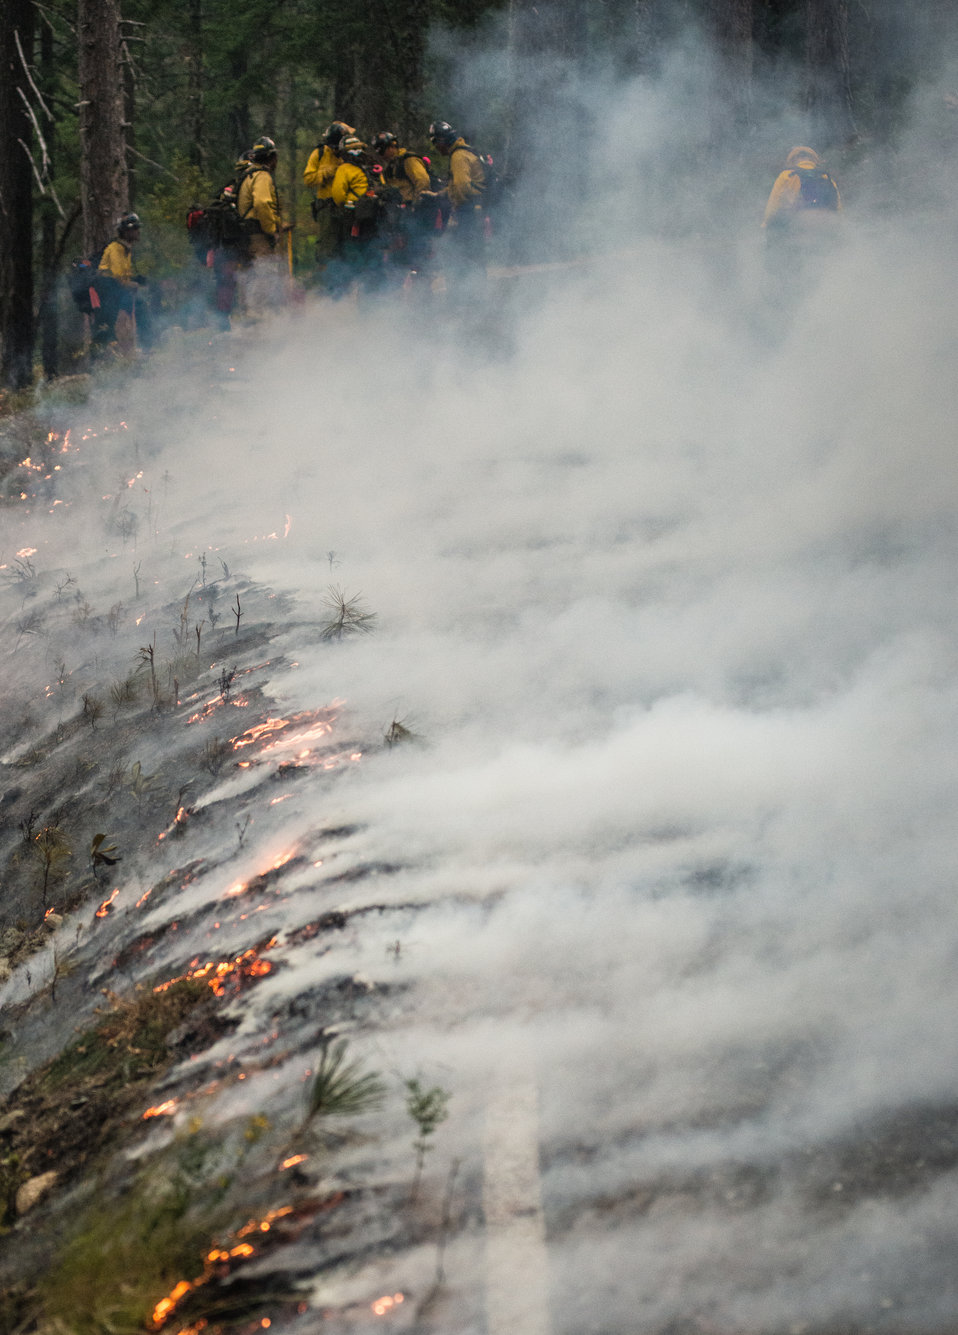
Geronimo Interagency Hotshot Crew, Department of the Interior (DOI) Indian Affairs (IA) Bureau of Indian Affairs (BIA) San Carlos Agency in Arizona; on assignment at the Big Windy Complex Wildlands Fire, approximately 15 miles west of Interstate-5 and East Northeast of Galice, Oregon, conducts a prescribed burn 'burnout' operation to help stop the main fire that may head toward this roadway, on Friday, Aug 9, 2013. The primary mission of the Interagency Hotshot Crews (IHC) is to provide a safe, organized, mobile and highly skilled hand crew for all phases of wildland fire suppression. The arduous duties and specialized assignments required of IHC personnel require uniform staffing, certification, training, equipment, communications, transportation, organization, and qualifications that adhere to interagency standards and guidelines.